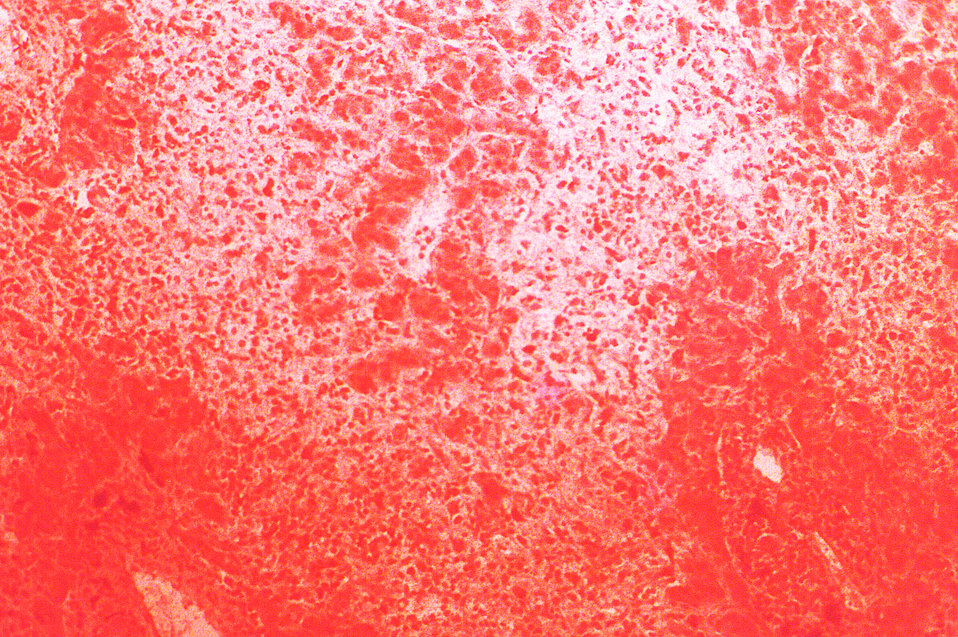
Under a low magnification of 100X, this hematoxylin-eosin-stained (H&E) photomicrograph depicts the cytoarchitectural changes found in a liver tissue specimen extracted from a deceased yellow fever patient. Of importance, are the areas of severe mid-zonal necrosis, and though few in number, the still-recognizable hepatocytes surrounding the portal spaces and the central veins, which were in the process of undergoing lysis. Also important, is the presence of malarial pigment, hemozoin, in the portal space, and an accompanying discrete lymphocytic infiltrate. See PHIL 2176, and 8239, depicting TEMs of the yellow fever virus.